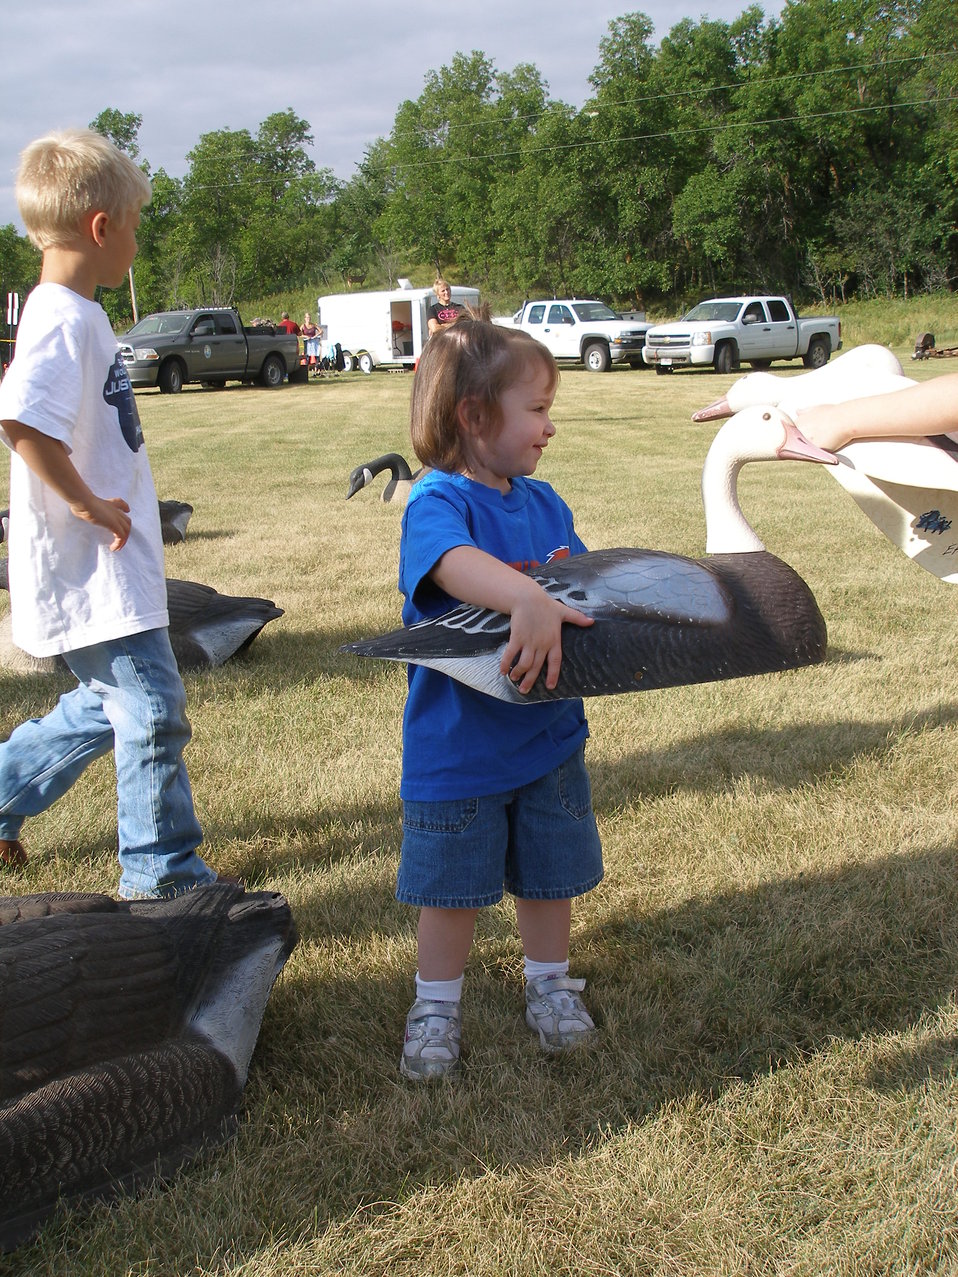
2011 Greenwing Day - Decoy Setup Session

Des Lacs National Wildlife Refuge, Tasker's Coulee